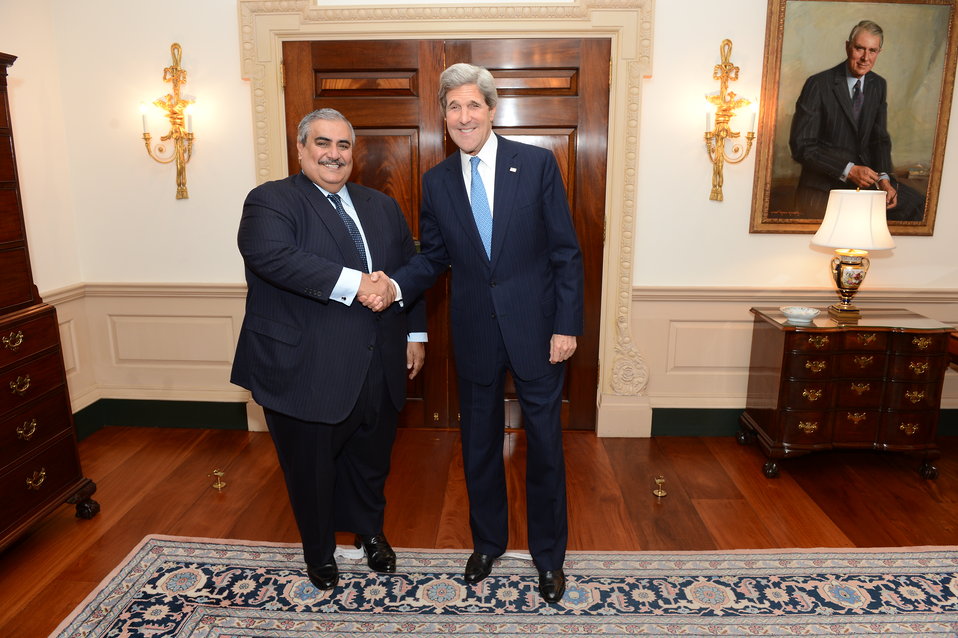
Secretary Kerry Meets With Bahraini Foreign Minister Sheikh Khalid bin Ahmed al Khalifa

U.S. Secretary of State John Kerry meets with Bahraini Foreign Minister Sheikh Khalid bin Ahmed al Khalifa, at the U.S. Department of State in Washington, D.C., on April 29, 2013.